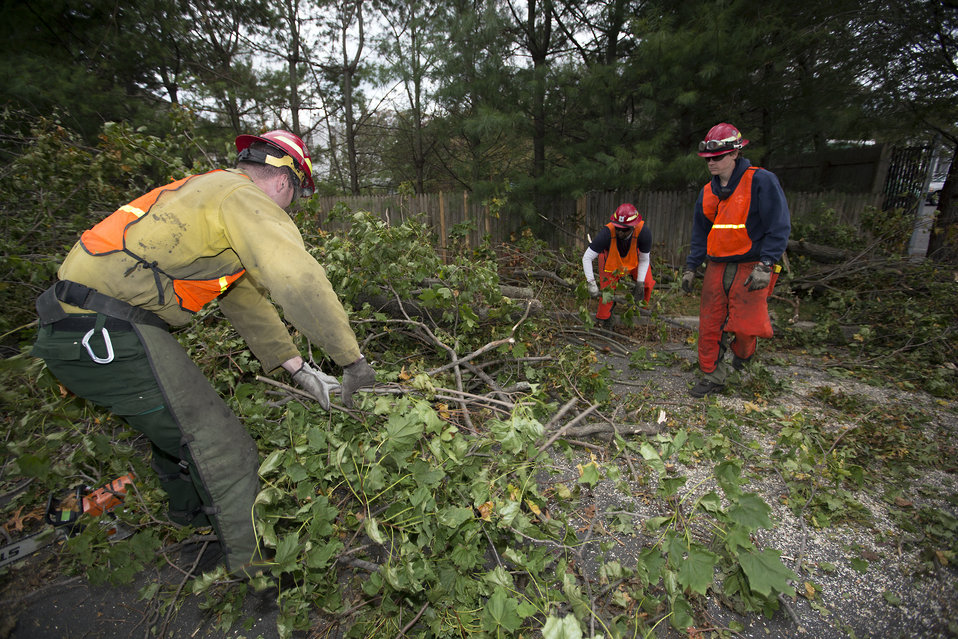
U.S. Forest Service Hot Shot crews clear the streets of downed trees from Hurricane Sandy in Long Island, NY on Nov. 3, 2012. The Hot Shots are from Region-8, Augusta Springs, VA.